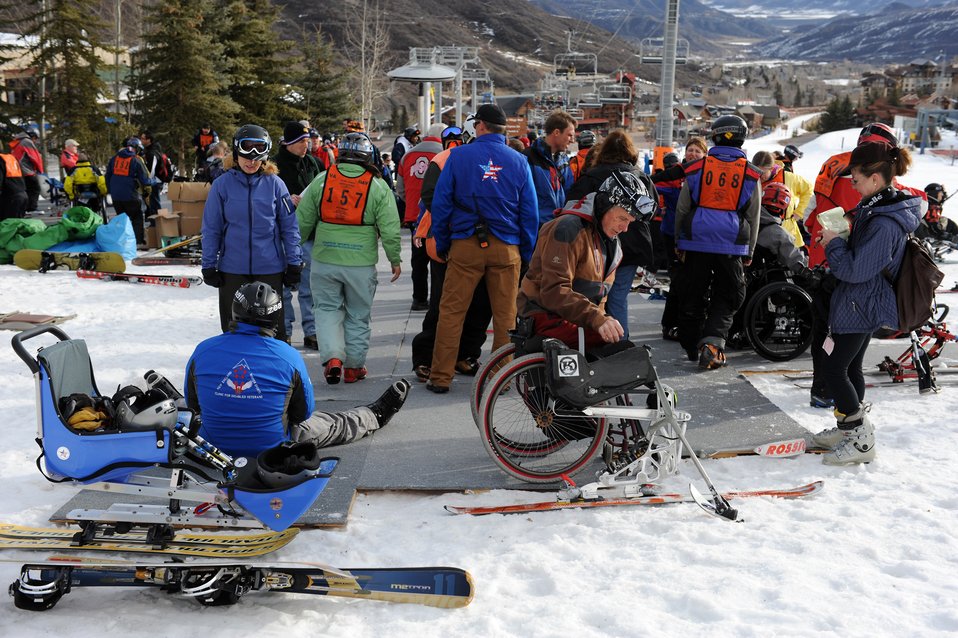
Assistant VA secretary, U.S. Olympians join veterans on ski slopes

Veterans Tammy Duckworth, Sean Halsted, Jim Martinson and John Register prepare to ski with Bode Miller, Casey Puckett and Andy Finch during the 24th National Disabled American Veterans Winter Sports Clinic March 31, 2010, in Snowmass Village, Colo. Bode is an Olympic Gold Medalist, Puckett is an Olympian and Finch is an Olympian snowboarder . Mrs. Duckworth is the assistant secretary of Veterans Affairs. Mr. Halsted is an Air Force veteran and a U.S. Paralympian. The event is sponsored by the Department of Veterans Affairs and Disabled American Veterans.